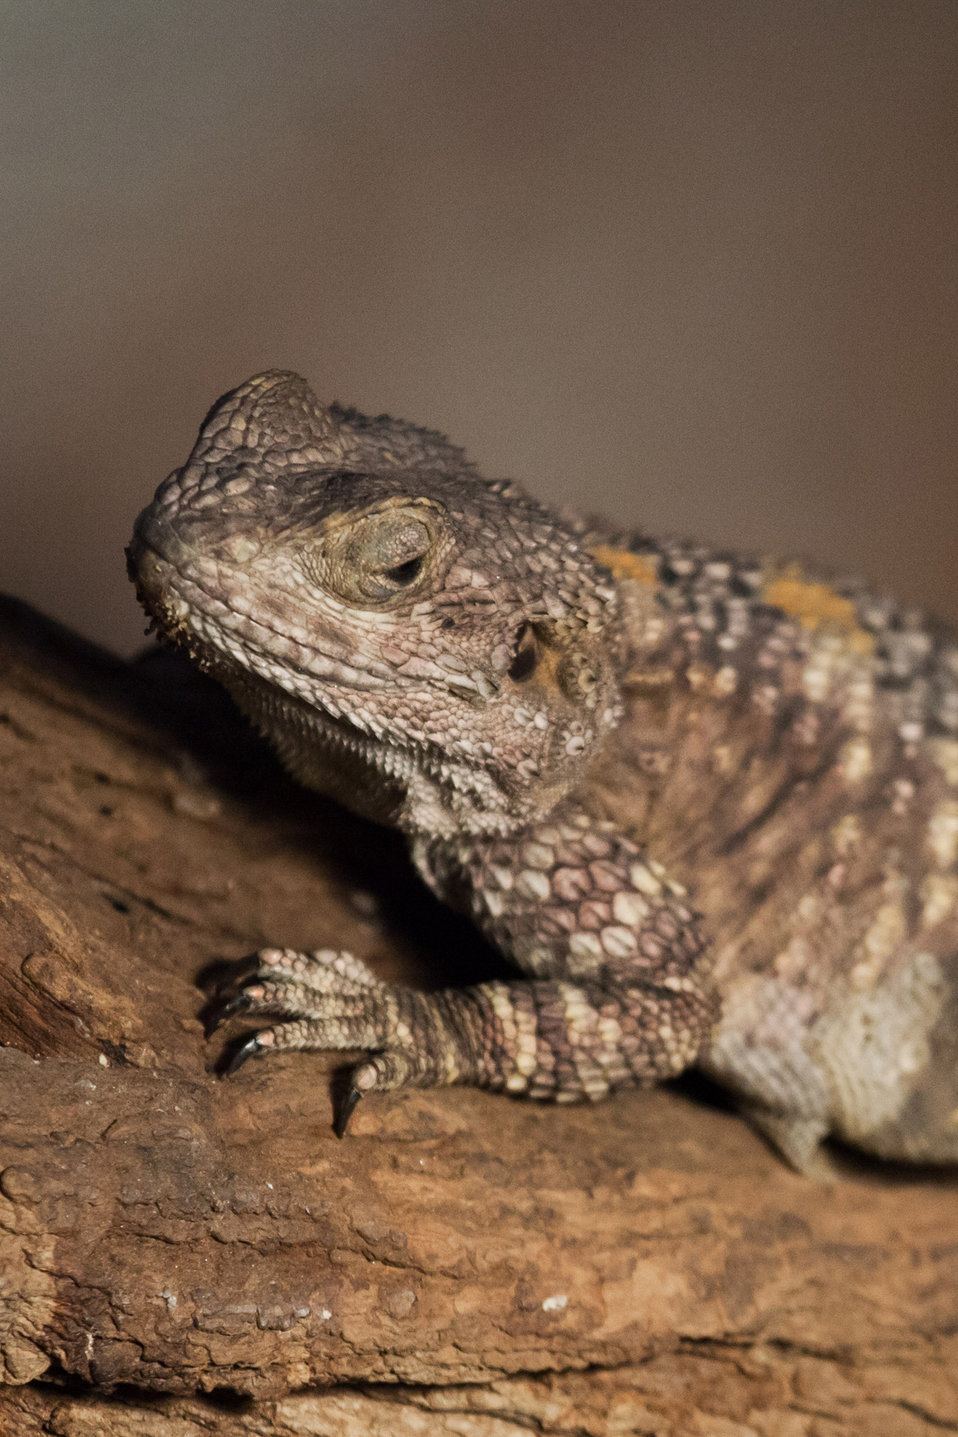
Bearded dragon lizard on the branch.